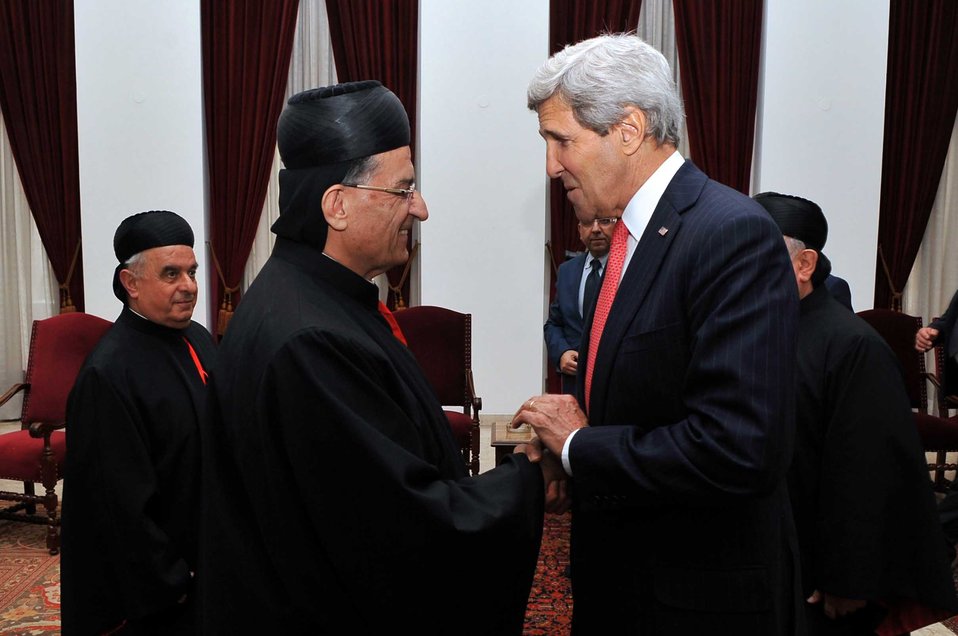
Secretary Kerry Meets With Christian Maronite Patriarch Rai in Beirut

U.S. Secretary of State John Kerry meets with Christian Maronite Patriarch Beshara Rai at the Archdiocese in Beirut, Lebanon, on June 4, 2014.